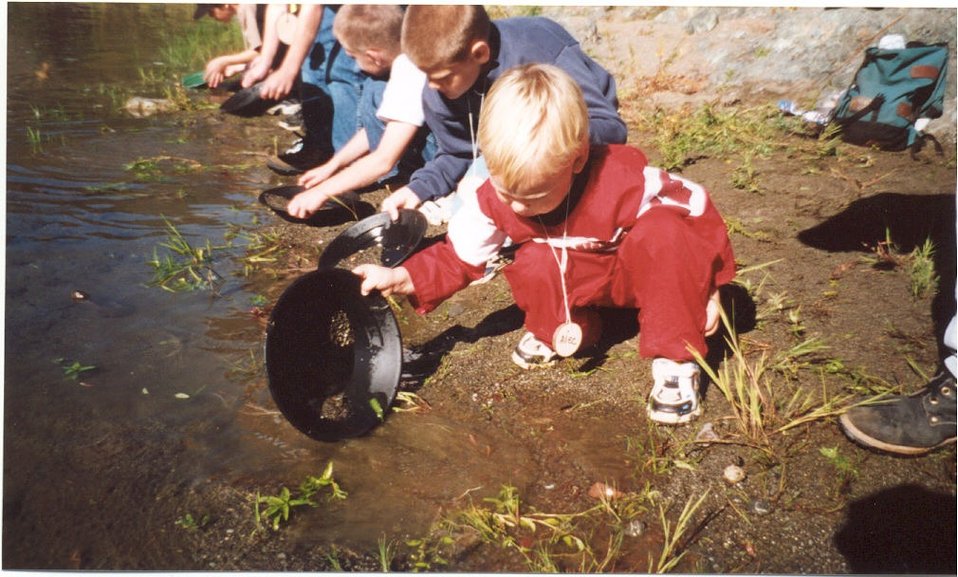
Public Lands Day goldpanning demonstration.